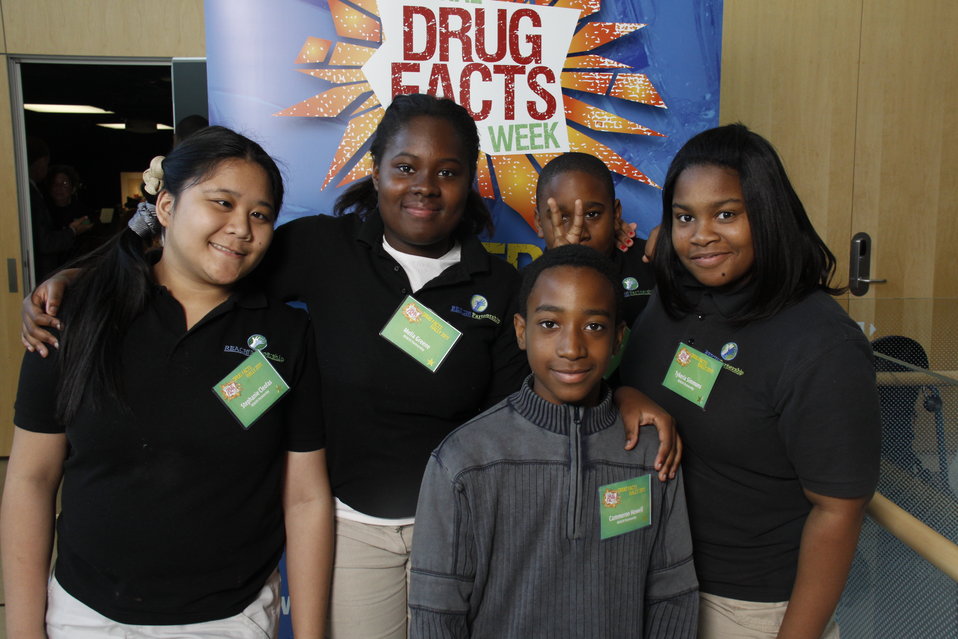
NDFW Mentor Event